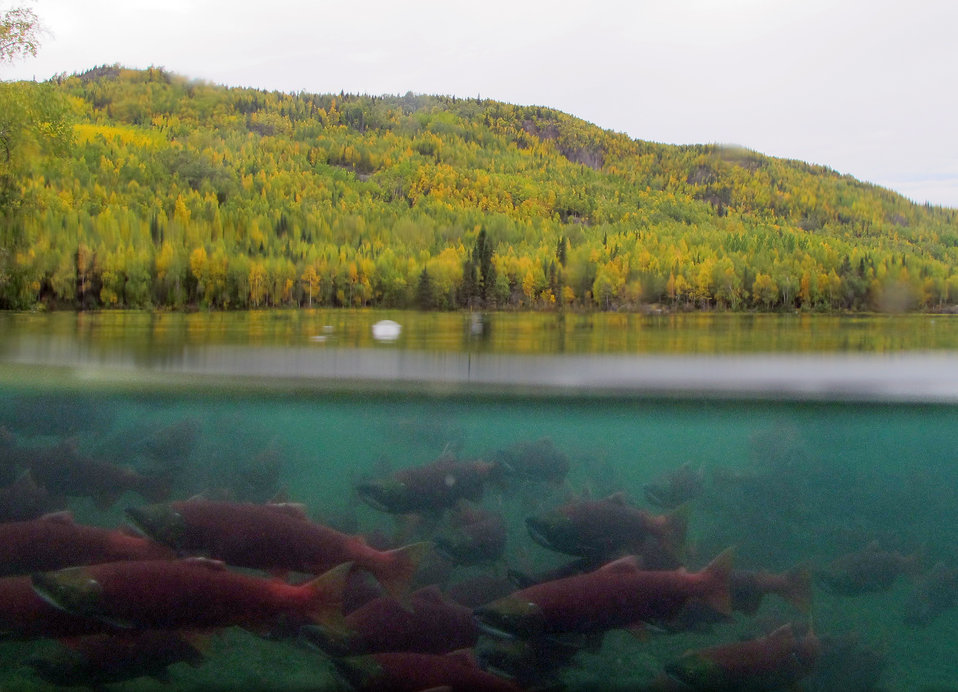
Sockeyes schooling in Hidden Lake